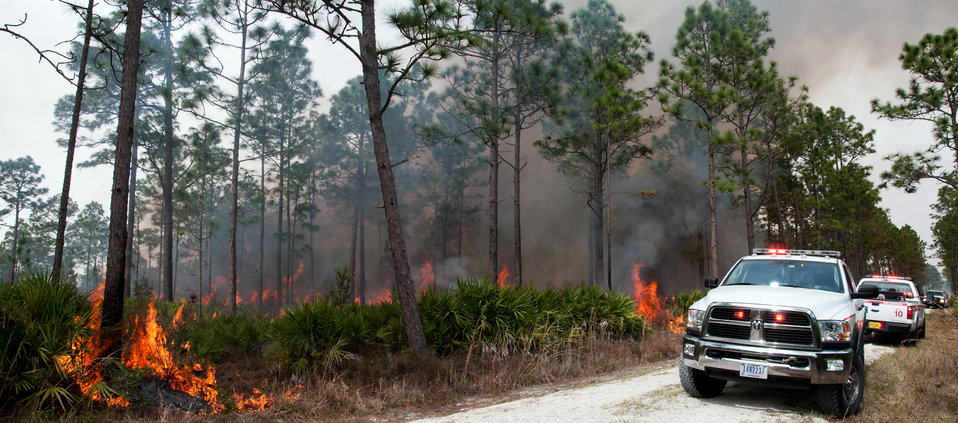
Lake Woodruff Volusia 5 Prescribed Fire Febuary 2014

USFWS firefighters watch a section of fireline as the fire burns out to it. On February, 12 2014 USFWS firefighters conducted a 137 acre prescribed fire at Lake Woodruff NWR to reduce the wildfire risk and enhance the wildlife habitat on the southern end of the refuge.